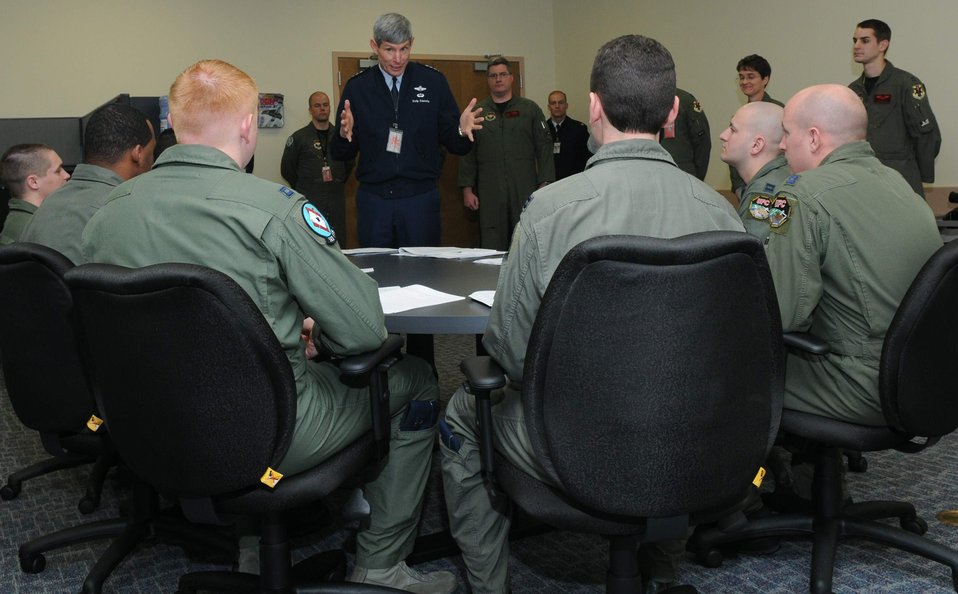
CSAF visits UAS class

Air Force Chief of Staff Gen. Norton Schwartz discusses the Unmanned Aircraft System Fundamentals Course with students during his Feb. 19 visit to the 563rd Flying Training Squadron at Randolph Air Force Base, Texas. This is the first class of non-rated officers to attend the course